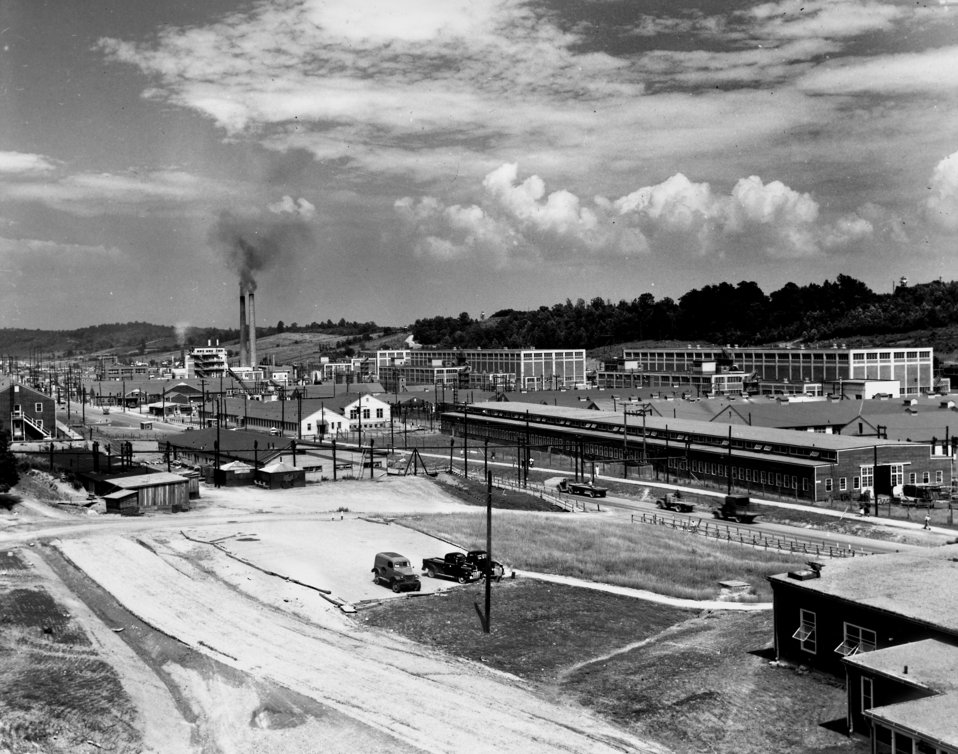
Y-12 Plant Area Oak Ridge 1945

2026 DOE photo Ed Westcott 7-5-1945 Oak Ridge Tennessee